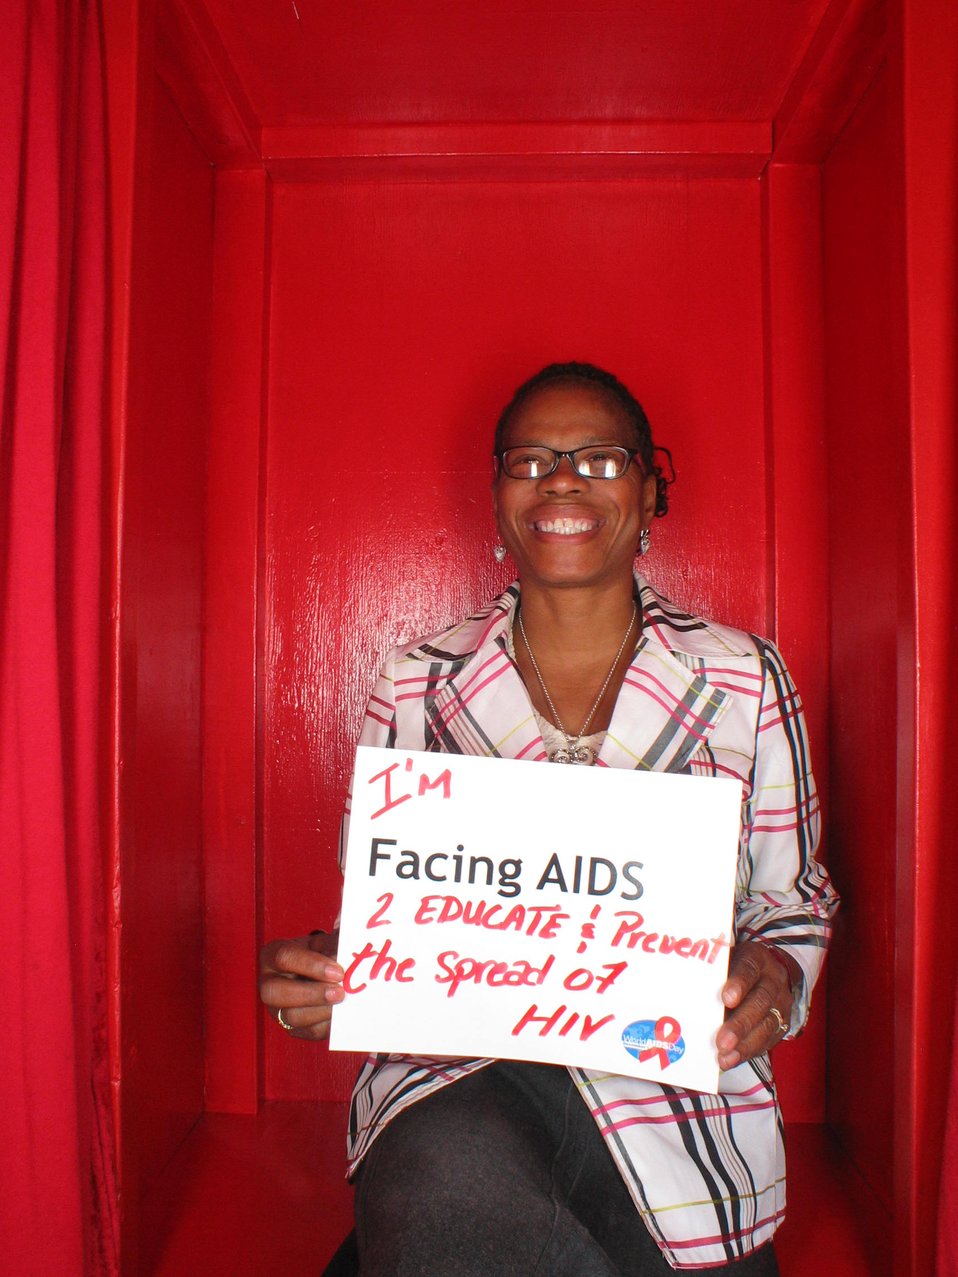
I'm Facing AIDS 2 educate and prevent the spread of HIV